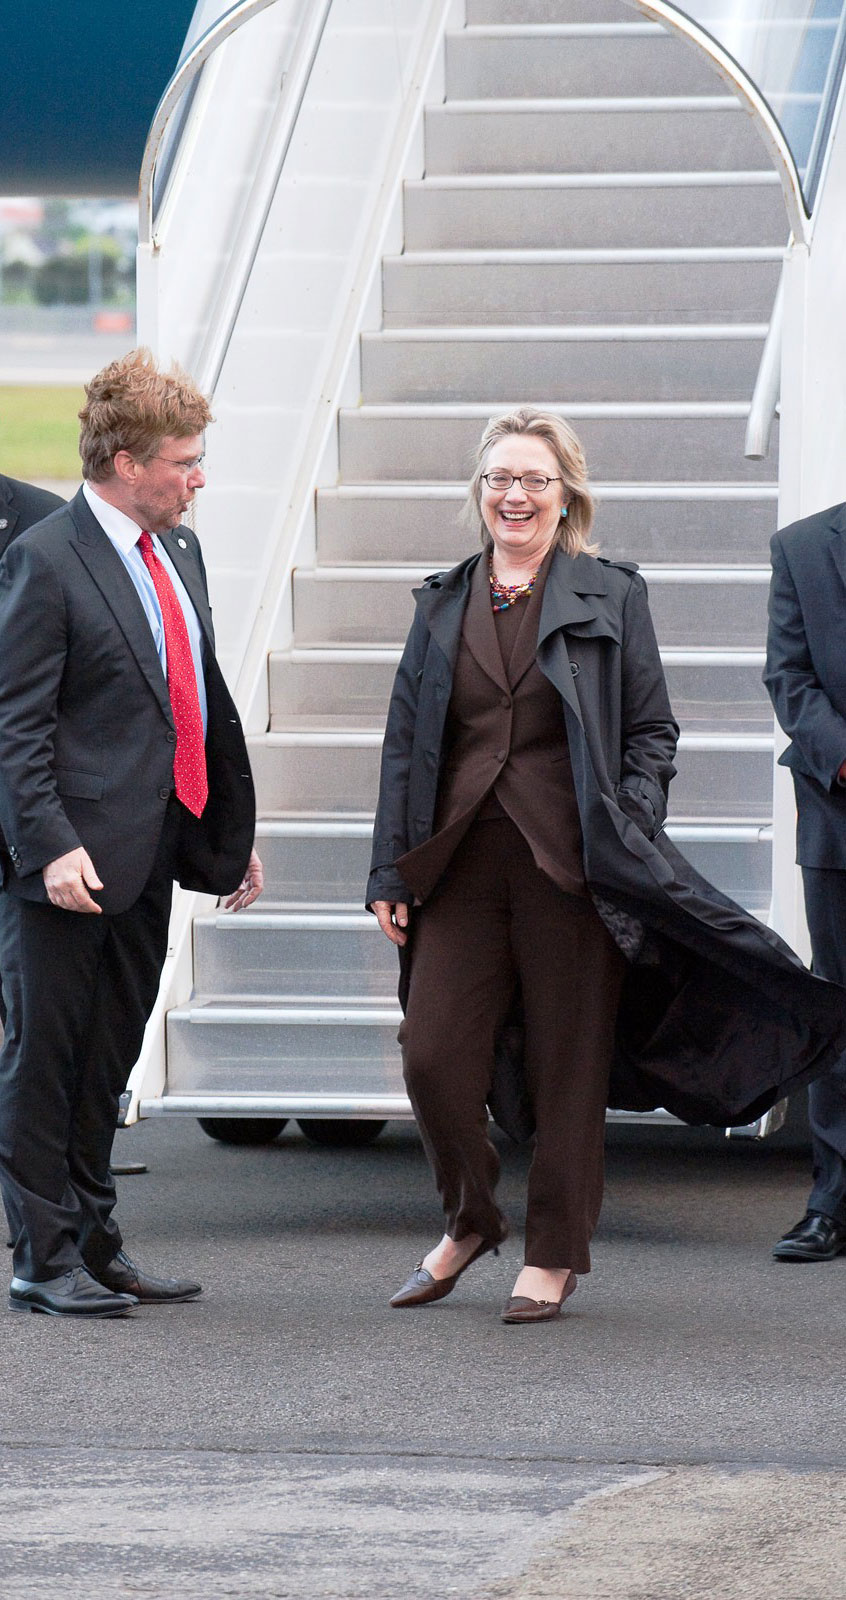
Secretary Clinton Arrives in Wellington, New Zealand

U.S. Ambassador to New Zealand David Huebner meets U.S. Secretary of State Hillary Rodham Clinton upon her landing in Wellington, New Zealand, on November 3, 2010.